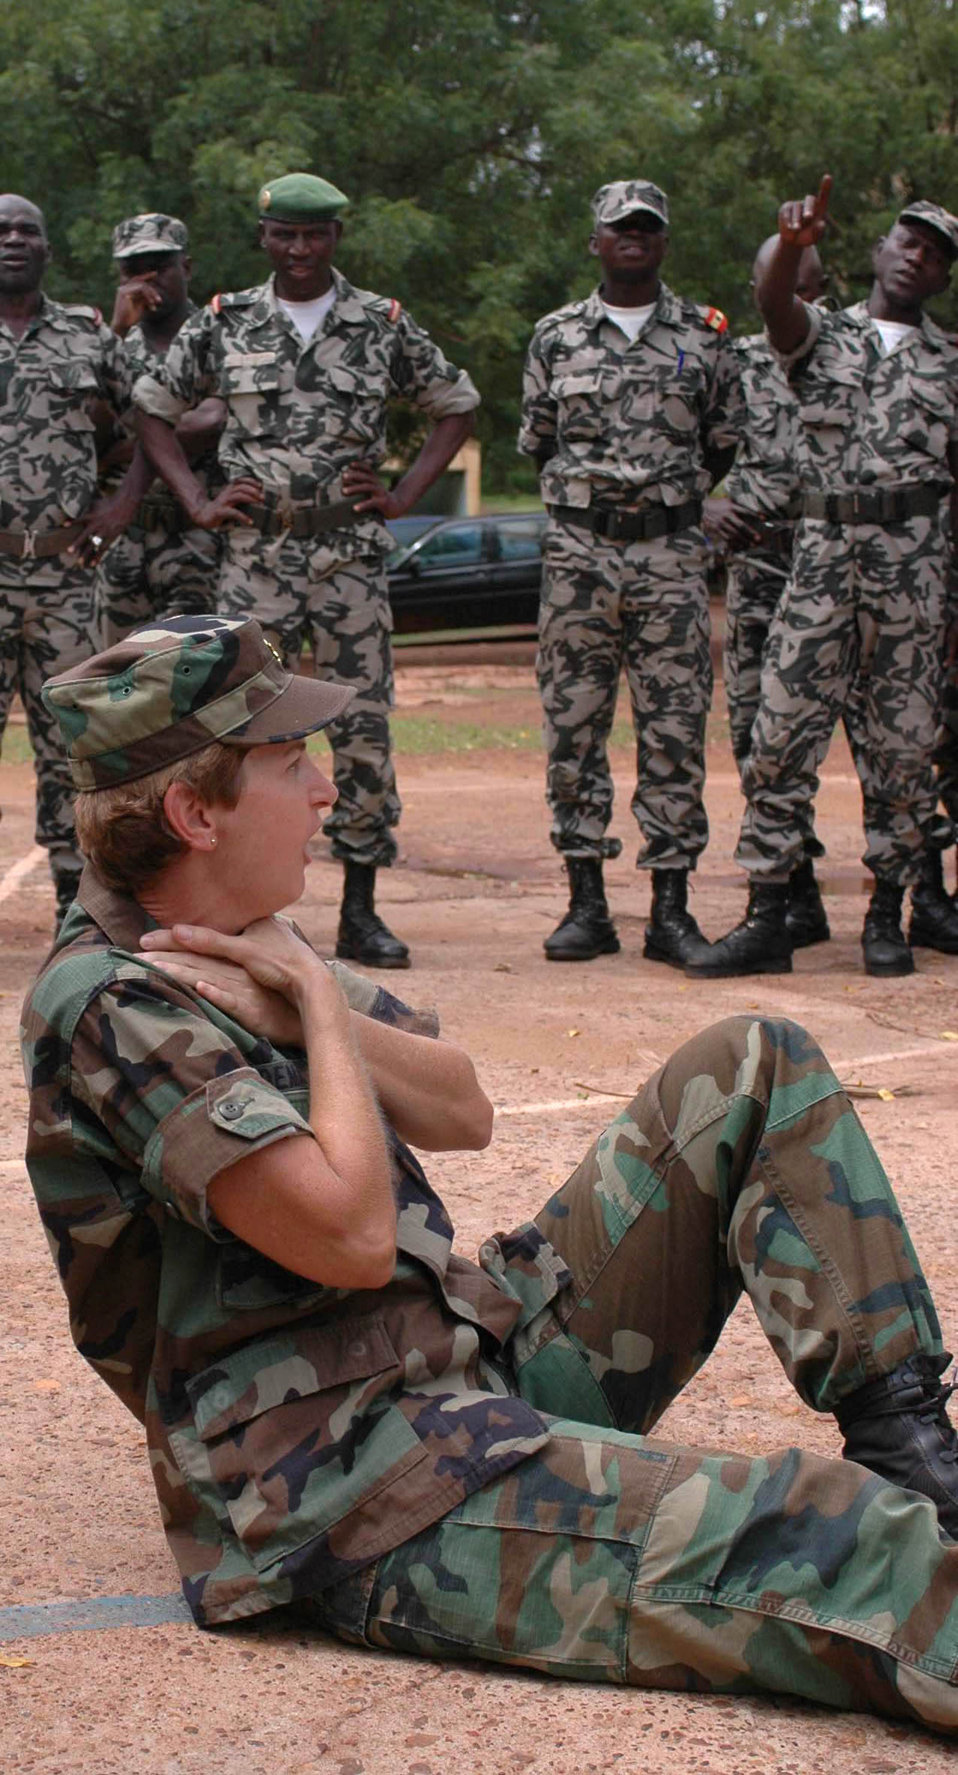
Malians learn life-saving techniques

Maj. Linda Demary simulates not being able to breath during a triage assessment training July 15 in the village of Kati. Malian medics and nurses learned how to handle patients in a mass casualty scenario during MEDFLAG 08. Major Demary is assigned to the 31st Medical Group, Aviano Air Base, Italy.